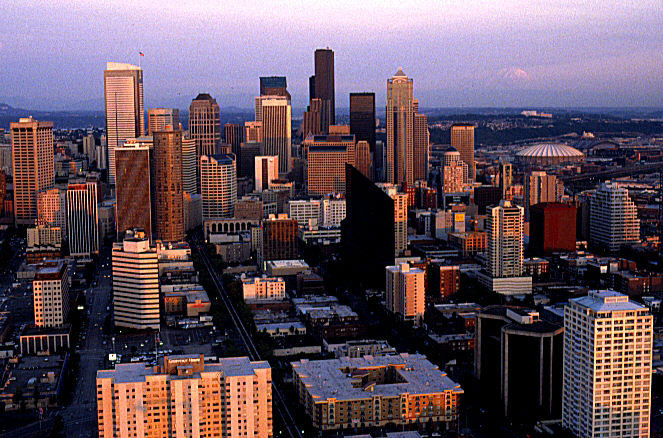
Seattle at sunset, from top of Space Needle.